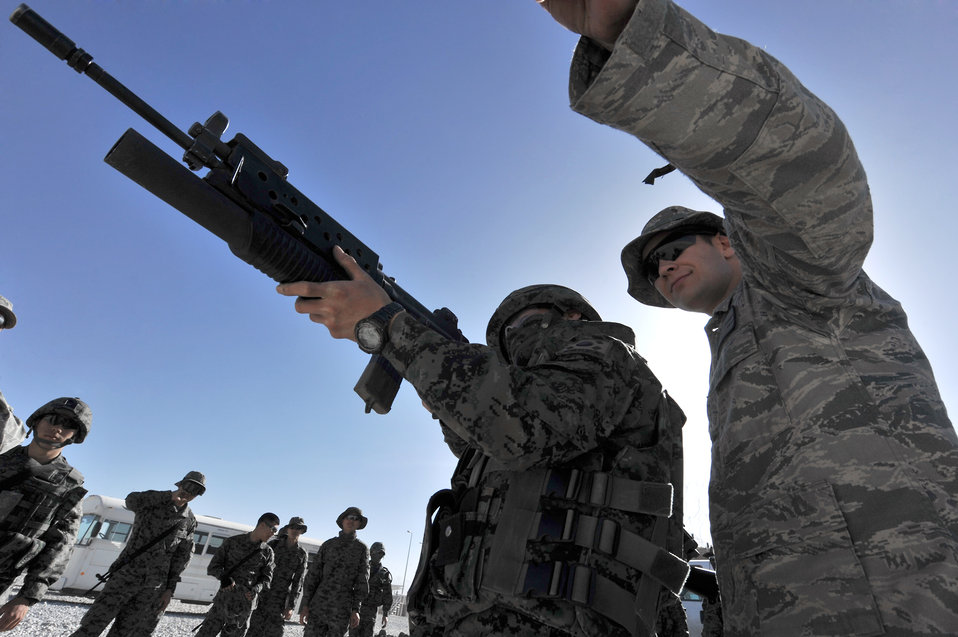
Korean soldiers integrate into Bagram's base defense

Senior Airman Gary Farmer, of the 455th Expeditionary Security Forces Squadron, watches Staff Sgt. Jon Myung Jae, a South Korean security forces soldier, fire a non-lethal 40 mm sponge round during M203 grenade launcher training at Bagram Airfield, Afghanistan, April 22, 2011. Members from the South Korean army security force have to qualify on a M203 grenade launcher before joining Bagram's base defense.